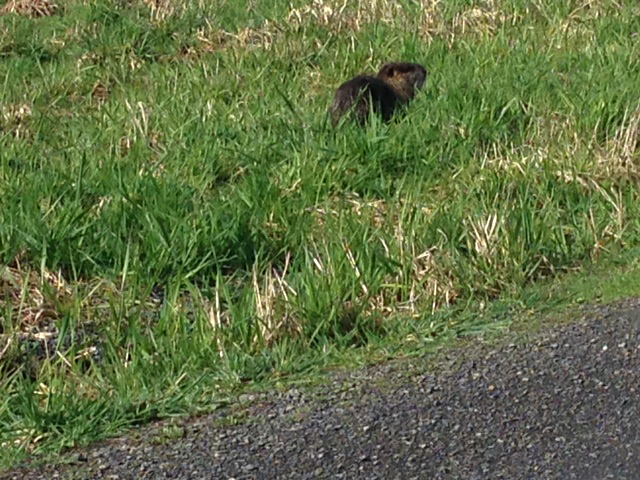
Nutria, a semi-aquatic South American rodent, causes significant damage in U.S. wetlands resulting in their classification as an invasive species. The feeding habits of nutria damage the fibrous root networks that bind aquatic plants together, quickly reducing wetlands to unconsolidated mudflats and, eventually, open water.